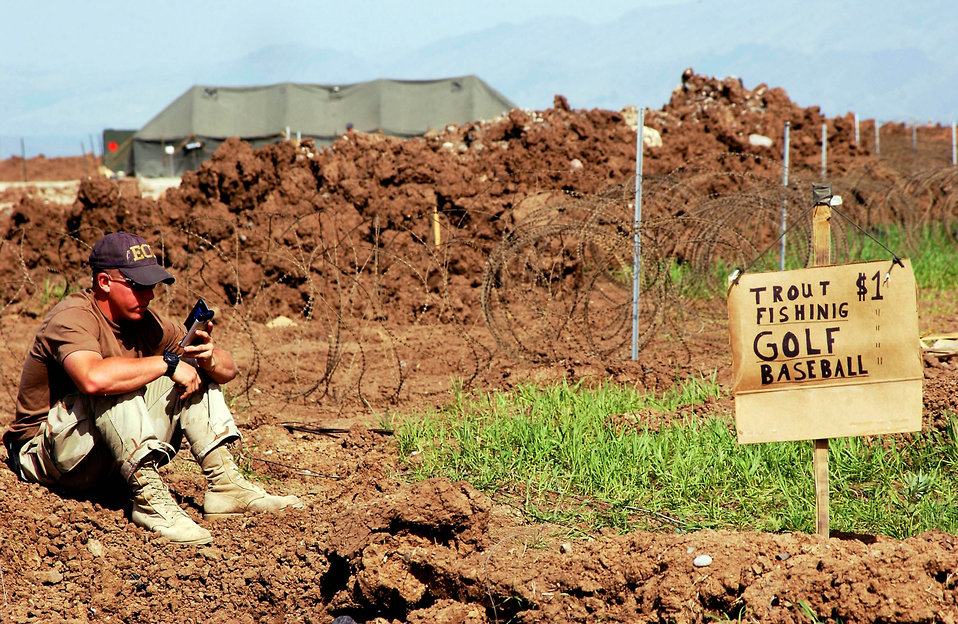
Extreme golf

OPERATION IRAQI FREEDOM -- Senior Airman Ian Garcia takes a break at Bashur Airfield in northern Iraq. Garcia is part of a six-man explosive ordnance disposal team at the base. He said he put up the sign next to a mud hole because he was tired of seeing people walk by frowning, and he wanted them to smile. Garcia is deployed from Nellis Air Force Base, Nev.